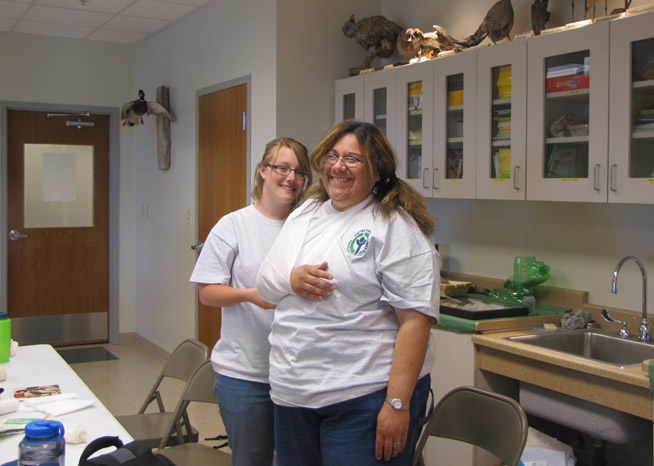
Youth Conservation Corps Learning First Aid

During the eight week program, Youth Conservation Corps crew learned First Aid training from law enforcement officers at Bear River Migratory Bird Refuge. Here they learn how to make a sling.